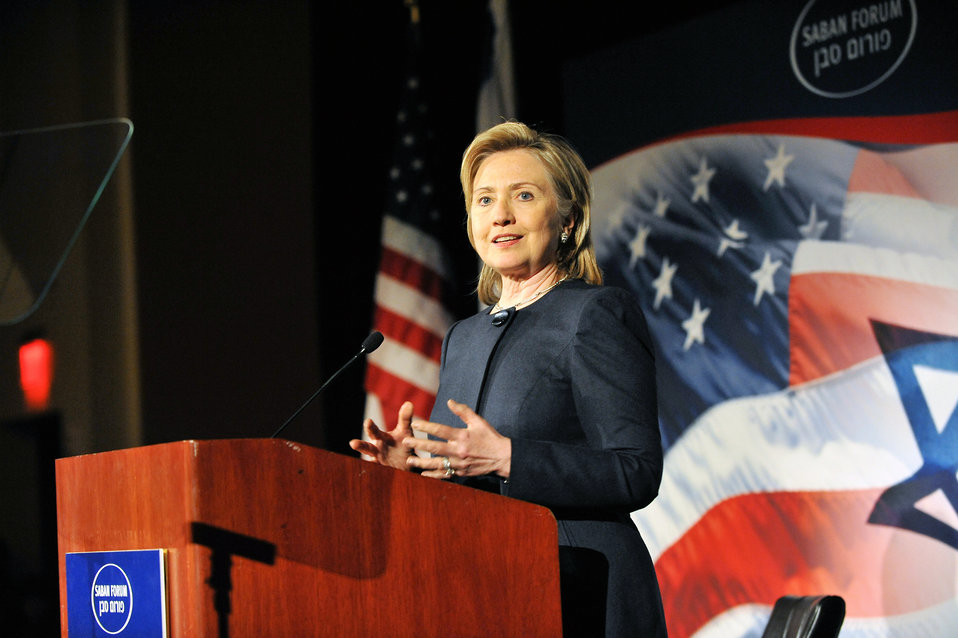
Secretary Clinton Delivers Remarks at the Saban Forum Gala Dinner

U.S. Secretary of State Hillary Rodham Clinton delivers remarks at the Saban Forum Gala Dinner at the Mandarin Hotel in Washington, D.C., on December 10, 2010.